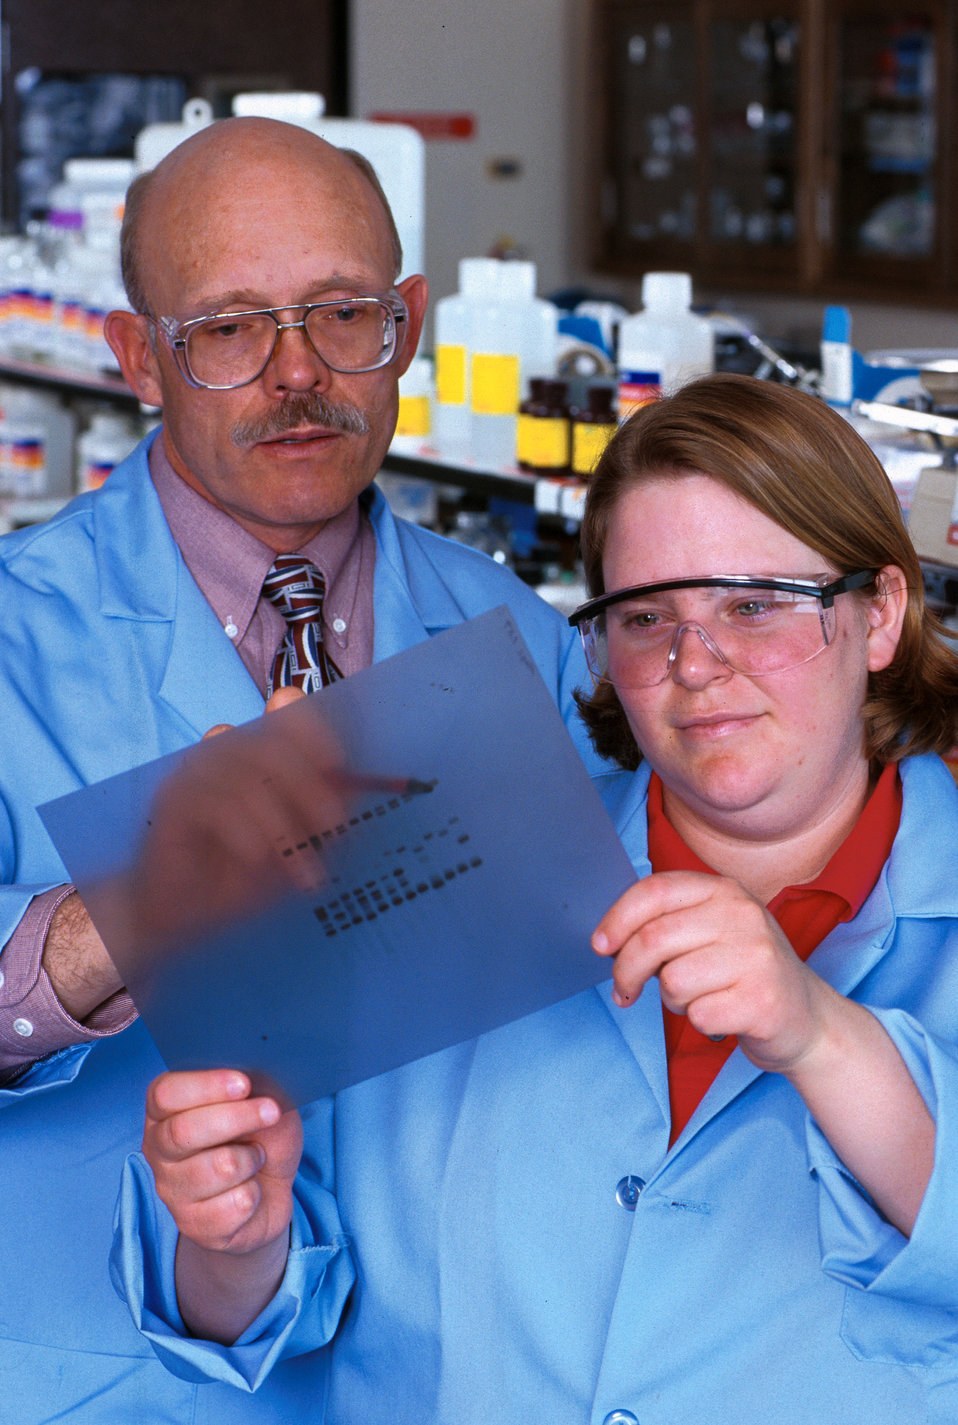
U.S. Department of Agriculture (USDA) Agricultural Research Service (ARS) microbiologist James Mecham and student research aid Jenny Dockham examine autoradiographic film showing bluetongue virus proteins.